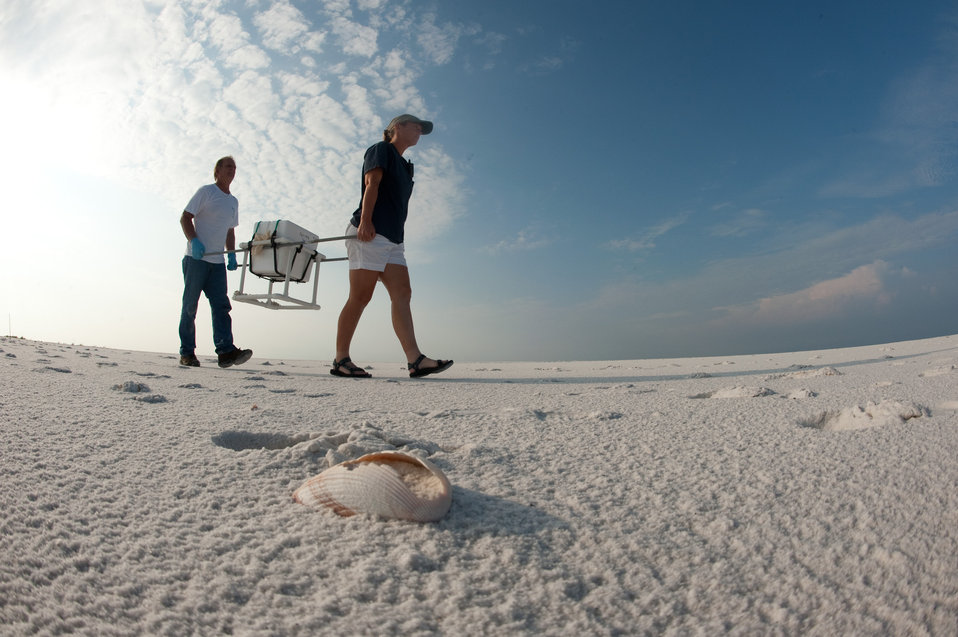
Turtle Eggs avoid Gulf Oil Danger

Kathy Gault (right) and Bob Miller (left) must walk in step and use a sedan style lifting rig to keep the ride of a Styrofoam cooler containing more than 55 Loggerhead sea turtle eggs, smooth and level as they walk in step across the pristine white sand beach, to their vehicles at Eglin Air Force Base, Florida, on August 9, 2010. Mr. Miller and Ms. Gault are endangered species biologists with the 96th Civil Engineer Squadron. The cooler is riding on elastic bands of a shipping frame. Because of the critical attachment of the embryo to the inside of the eggshell, the eggs must be gently moved. With equal care the transportation to the Atlantic coast is critical and gentle. At a controlled climate facility, they will be allowed to hatch in the cooler. Wildlife technicians will then release them into the ocean.